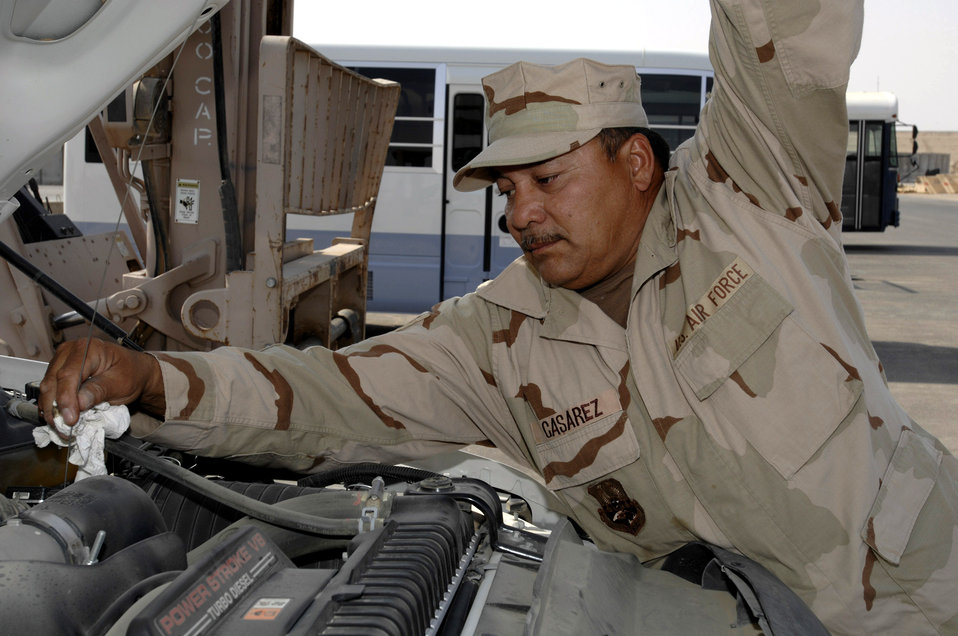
Airman keeps vehicles movin' four decades in the making

Technical Sgt. Miguel Casarez checks the oil of a government-owned vehicle Oct. 4 at Ali Base, Iraq. Sergeant Casarez is a member of theTexas Air National Guard's 149th Fighter Wing's Logistics Readiness Squadron deployed to the 407th Expeditionary Logistics Readiness Squadron.